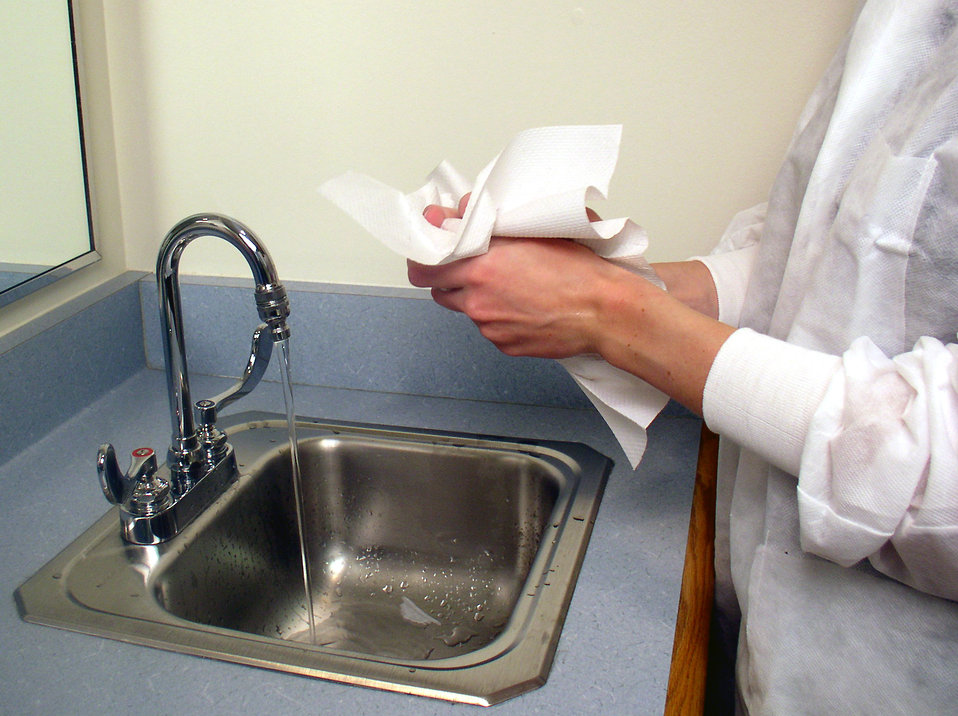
(Image 10 - Hand Washing Procedure) This laboratorian is shown drying her hands with a disposable hand towel.